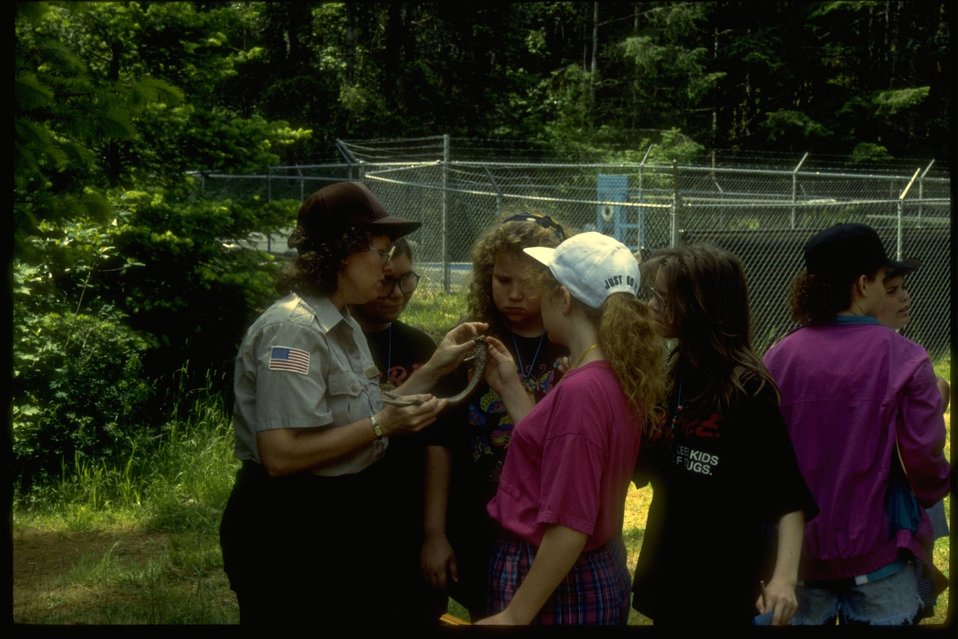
Presentation to Kids.